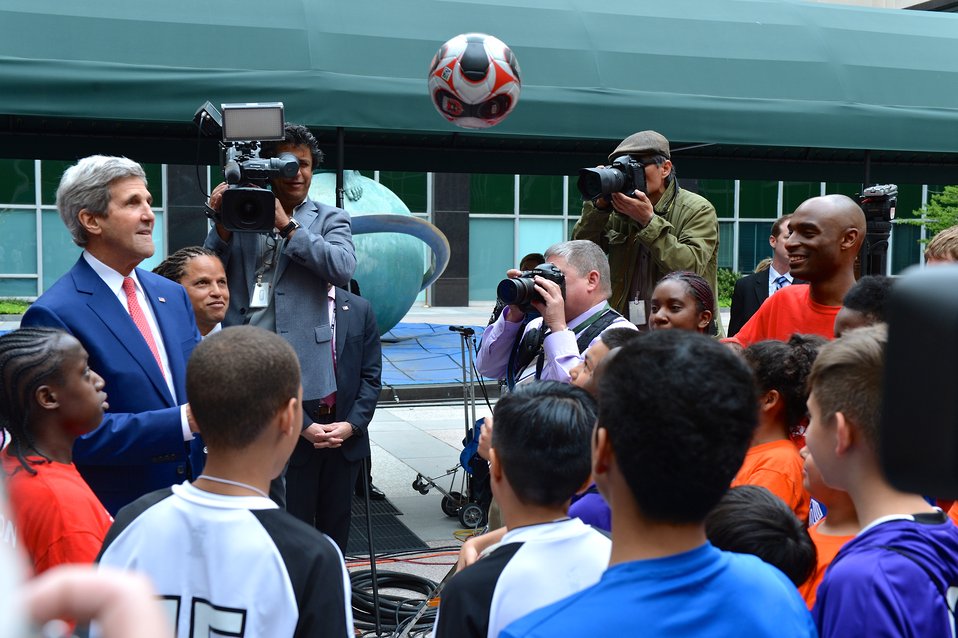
Secretary Kerry Plays Soccer With Local Athletes

U.S. Secretary of State John Kerry enjoys a moment playing soccer with athletes from local youth soccer organizations at the U.S. Department of State in Washington, D.C., on April 14, 2014.